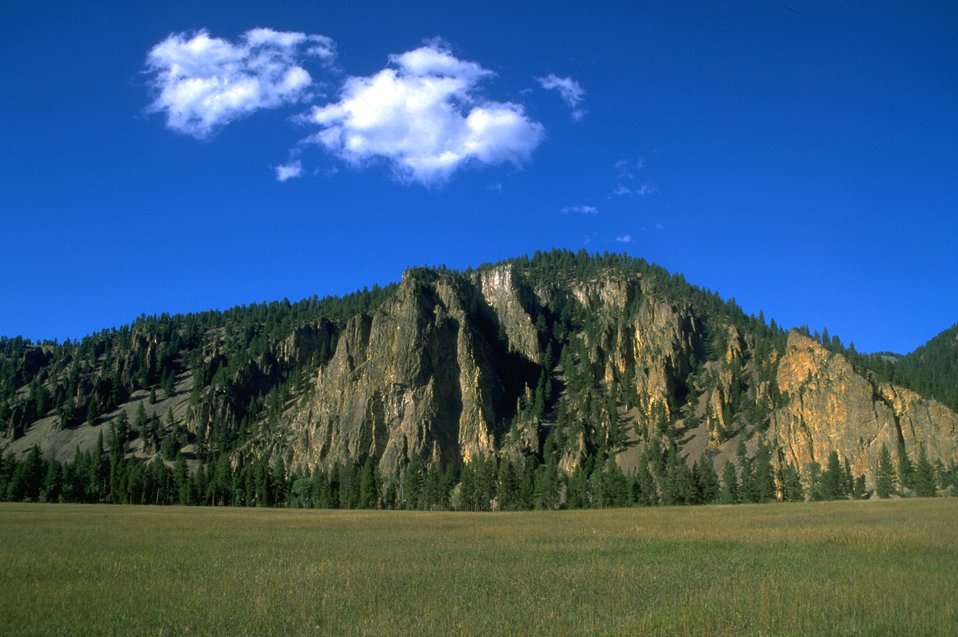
Squaw Rock ACEC (area of critical environmental concern)